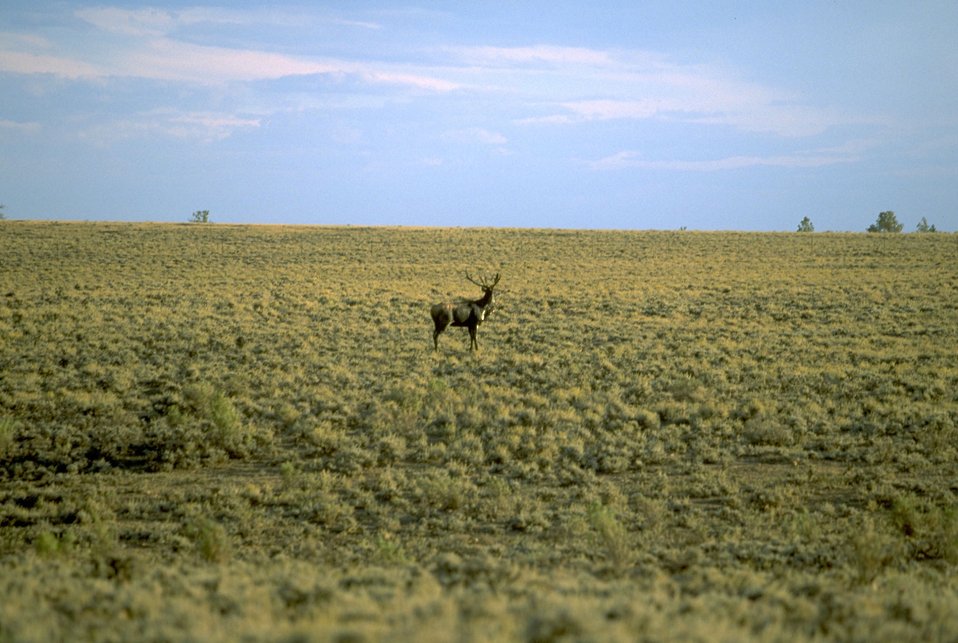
Elk in velvet